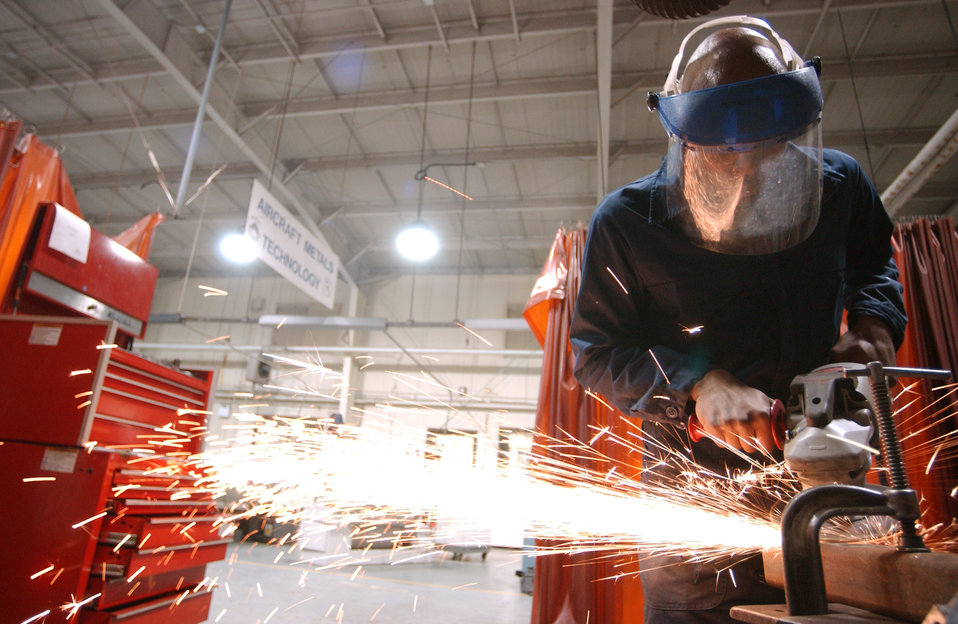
Spark and grind

KUNSAN AIR BASE, South Korea -- Senior Airman Kendrick Butler uses a grinder to repair a munitions stand here Dec. 1. He is assigned to the 8th Maintenance Squadron's fabrication shop.